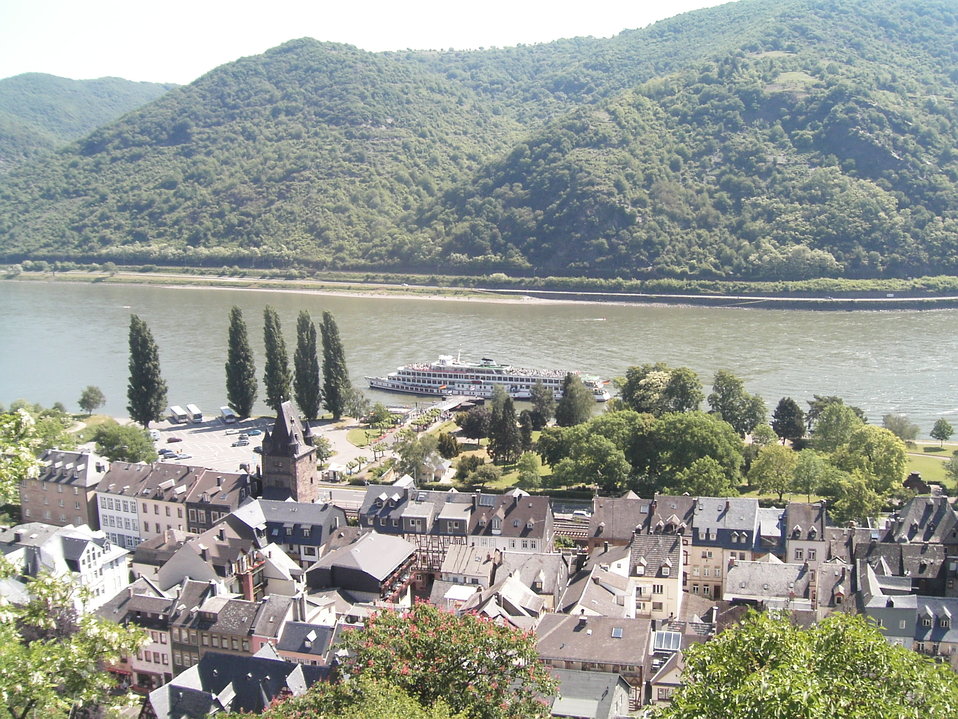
en:Bacharach, taken from en:Castle Stahleck, depicting a portion of the town, the en:Rhine and a passenger boat Image created by Philip Hibbs on May 29th, 2004 and released into the public domain